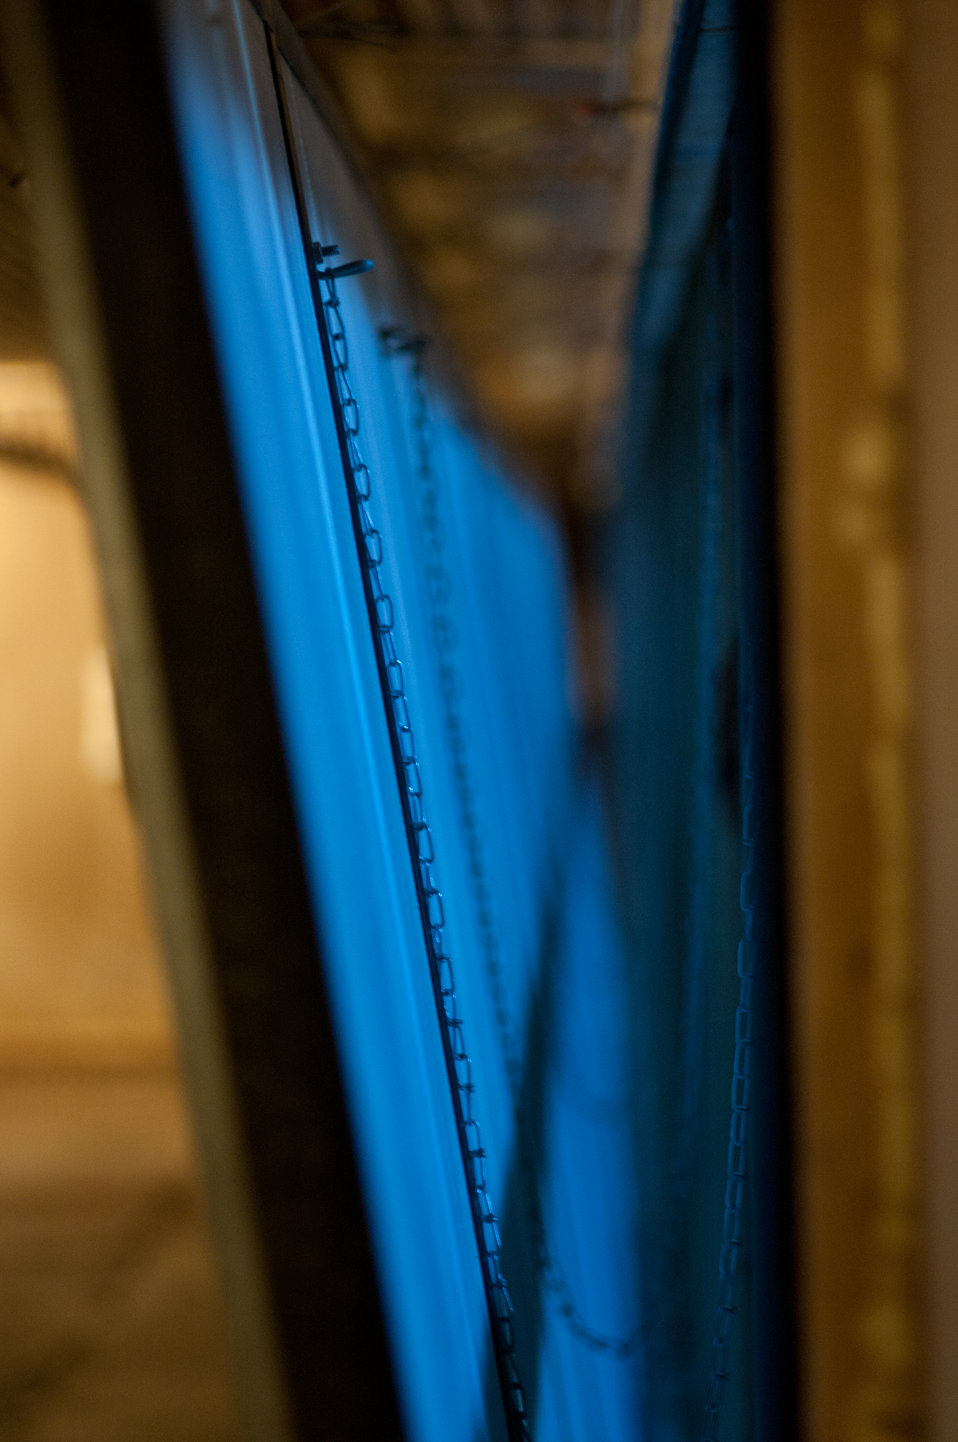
When needed, computer controlled cover panels swing open revealing evaporative cooler elements that cool air 10-15 degrees as it passes through it. Roxanne and Matthew Molnar have an 80,000 poultry farm on Thursday, April 21, 2011, in Grantville, PA and were recipients of a $20,000 Rural Energy for America Program (REAP) grant. The money is a portion of the cost to modernize the second of two 40,000 chicken capacity chicken houses. Chickens need to be kept at a comfortable temperature to remain productive. New radiant heaters keep the chickens warm during Pennsylvania winters. On warm days, ceiling vents provide passive venting of heat out of the building; when chicken house temperatures are estimated to be above 90 degrees, fans come on, pulling air through water evaporator elements lowering air temperature down 10-15 degrees and flows along the chicken house's length, in effect a tunnel of cooled air. The benefits to the chickens are heat and excess moisture removal; minimized dust and odor; limits buildup of ammonia and carbon dioxide; and provides oxygen for respiration. All these systems are computer controlled allowing owner, Roxanne Molnar to run the farm by herself and raise two small boys Gavin (2) and Grant (5). Husband, Matthew works off the farm and frequently travels, so along with the demands of parenting and manually controlling fans, vents, and having to remove the 80,000 chickens from their feeders and moving them around to cool them was an increasingly daunting task. The computer controls of the new system automate many of the daylong tasks allowing the Molnar’s to run their family farm. USDA Photography by Lance Cheung.